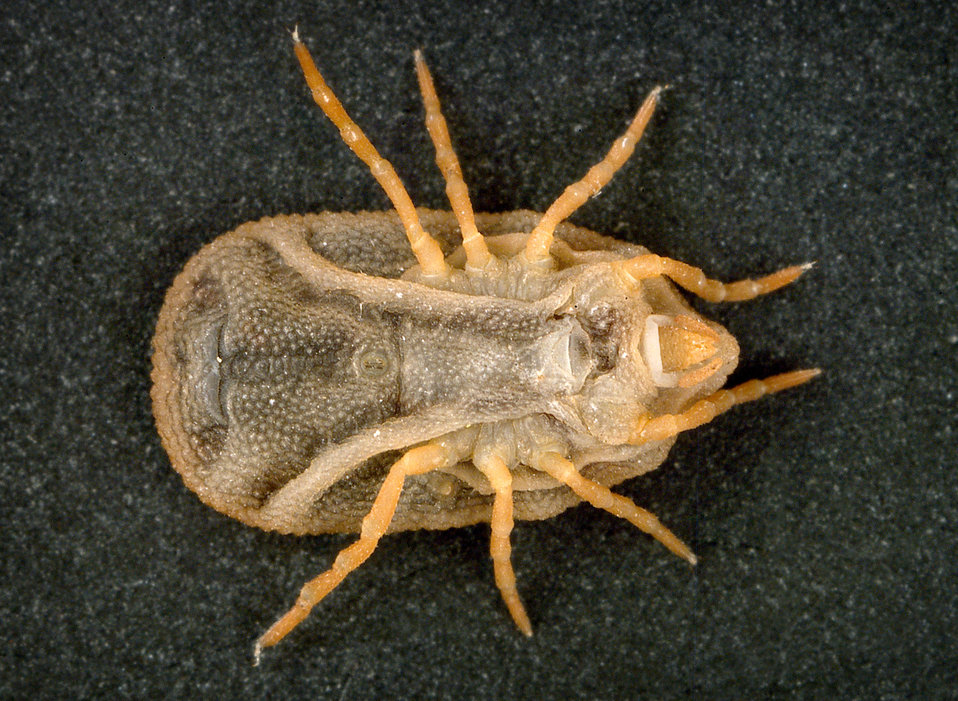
This is a ventral view of the 'soft tick' Carios kelleyi, formerly Ornithodoros kelleyi, or the 'Bat Tick'.